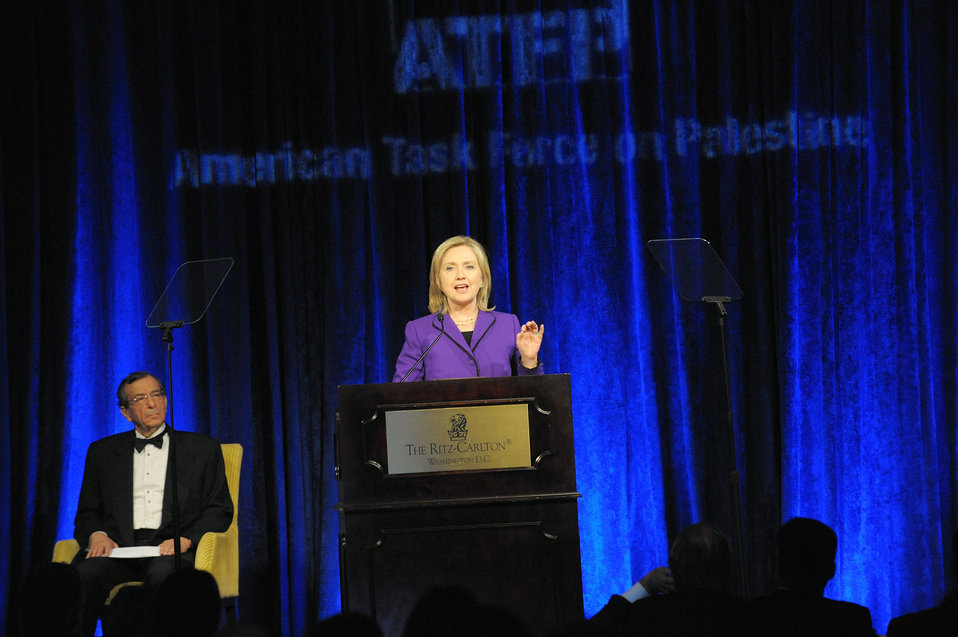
Secretary Clinton Delivers Remarks at the American Task Force on Palestine's 5th Annual Gala

U.S. Secretary of State Hillary Rodham Clinton delivers remarks at the American Task Force On Palestine's Fifth Annual Gala at the Ritz Carlton Hotel in Washington, D.C., on October 20, 2010.